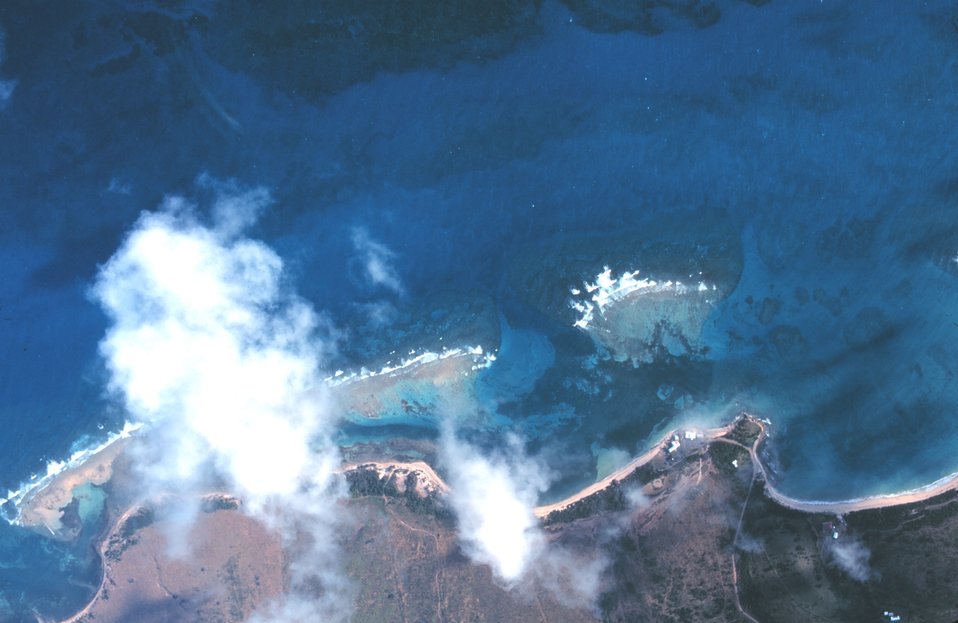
Aerial view of St. Croix coastline